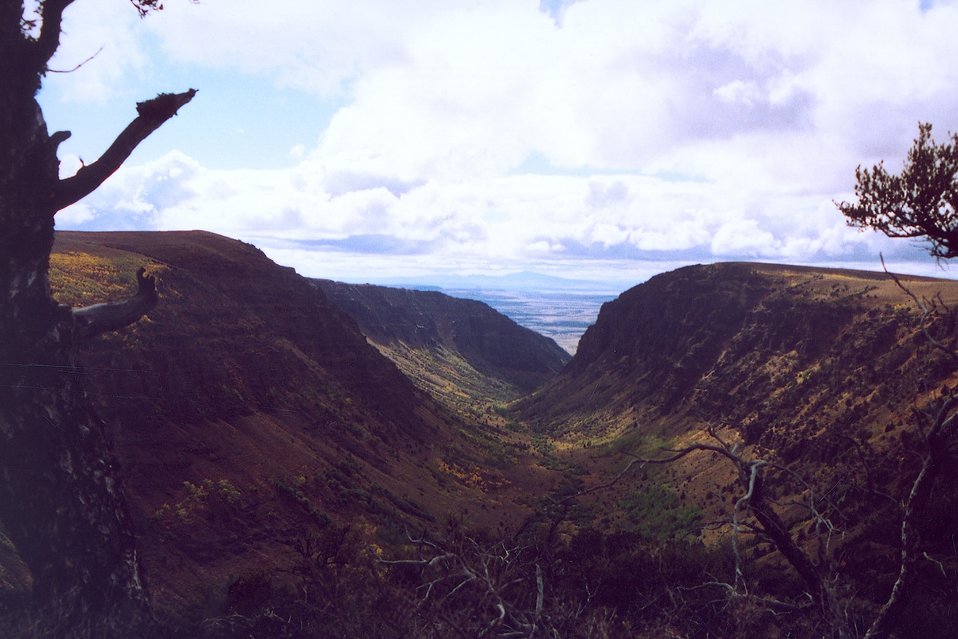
Little Blitzen near Pratt Overlook, Steen's Mountain.